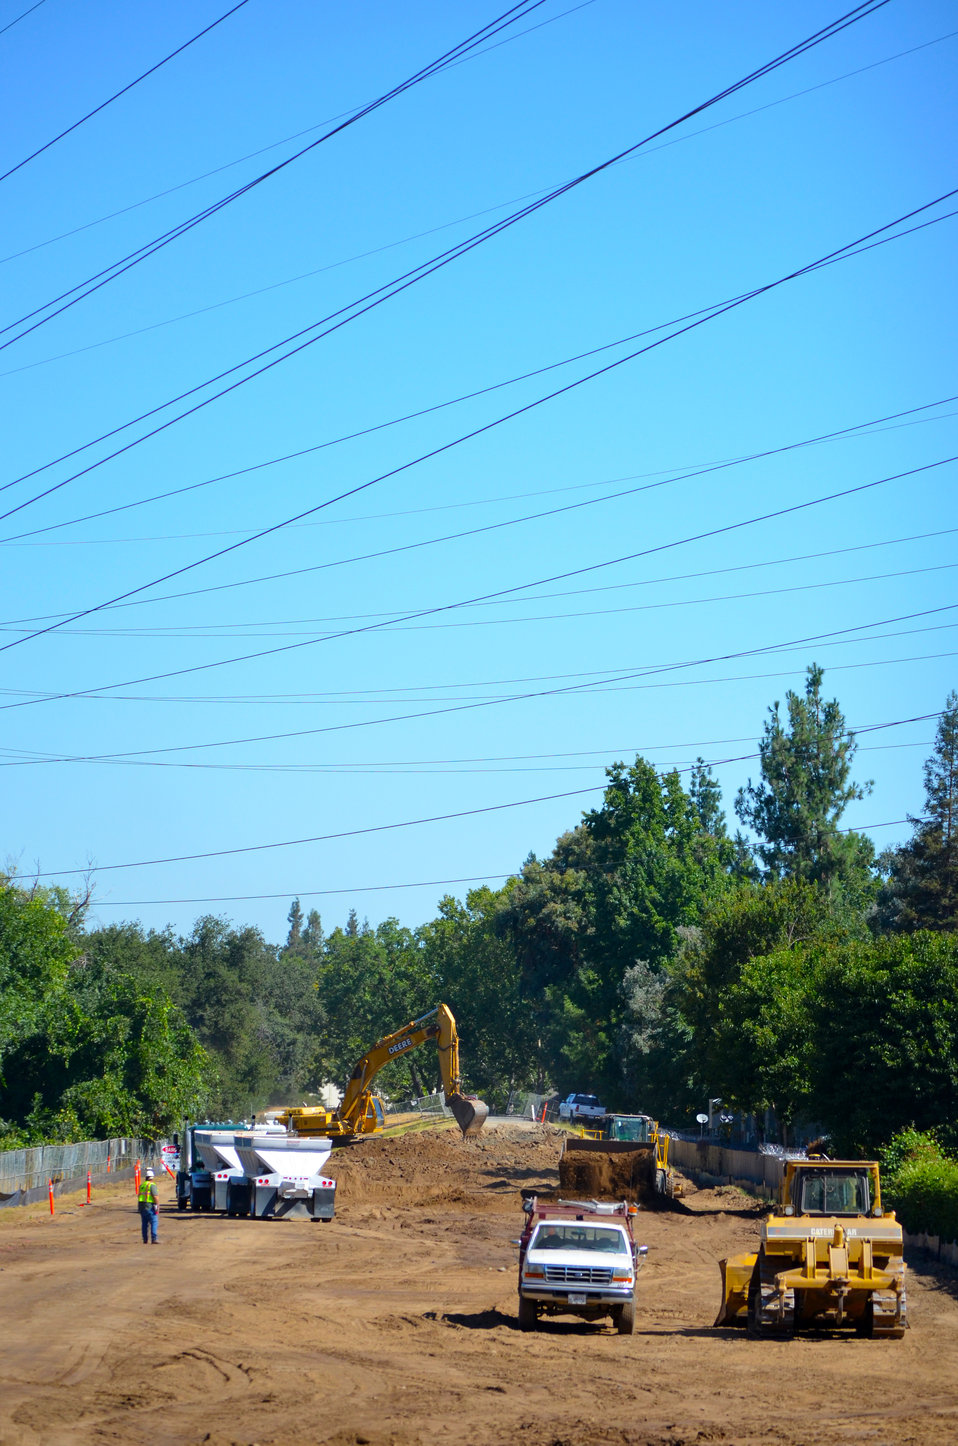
Excavation begins under high-voltage power lines

The U.S. Army Corps of Engineers began levee construction work Aug. 28, 2012, along the American River’s north bank between Spanos Court and Campus Commons golf course in Sacramento, Calif. Custom-built equipment will be used to install a nearly 900-foot seepage cutoff wall partly located under high-voltage power lines, which will be de-energized for the nighttime-only work scheduled from September 10-15. The nighttime de-energizing was chosen to minimize the impact to local residents. The work is part of a joint flood-risk reduction effort between the Corps, the state of California’s Central Valley Flood Protection Board and Sacramento Area Flood Control District.